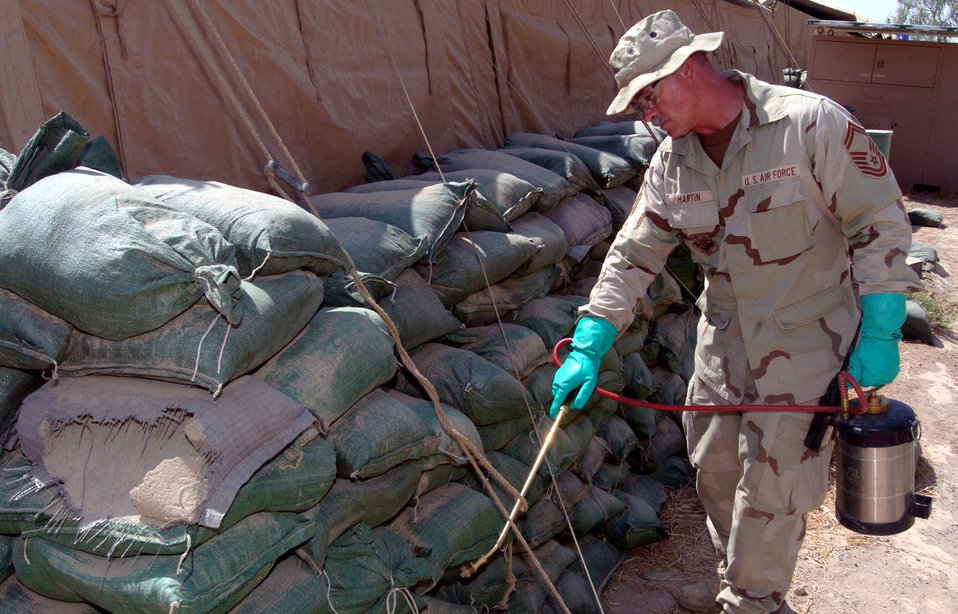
Pest control

BALAD AIR BASE, Iraq -- Senior Master Sgt. Burhl Hartin sprays insecticide at the base of a tent here Aug. 3. Sergeant Hartin is a pest management specialist with the 332nd Expeditionary Civil Engineer Squadron. He is deployed from the 125th Fighter Wing in Jacksonville, Fla.